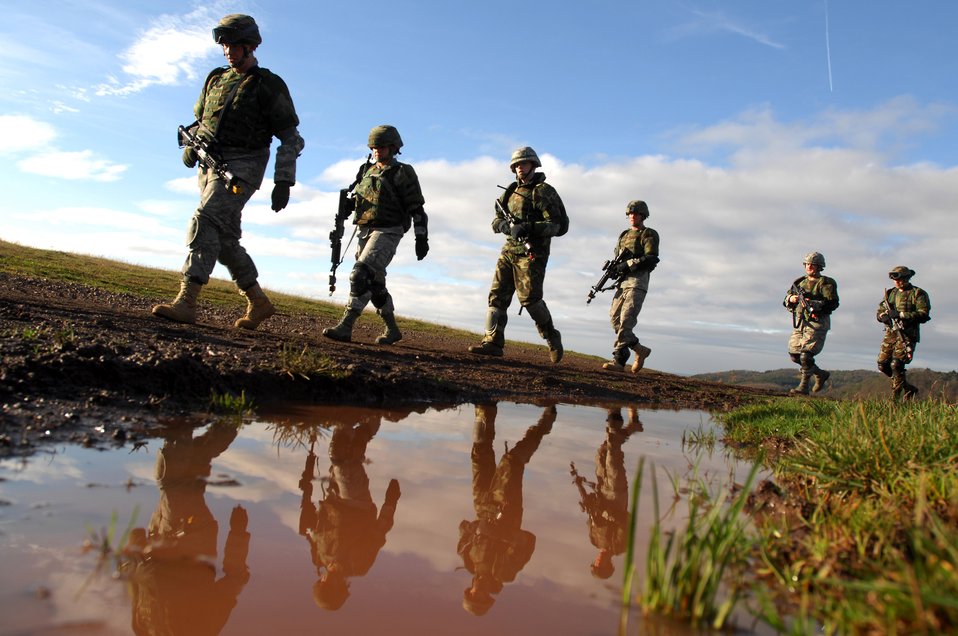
Walk this way

Security Forces Airmen participate in an exercise to prepare for deployment Nov. 14 at Baumholder U.S. Army Garrison, Germany. During this two-day exercise, students were taught convoy and patrol techniques.